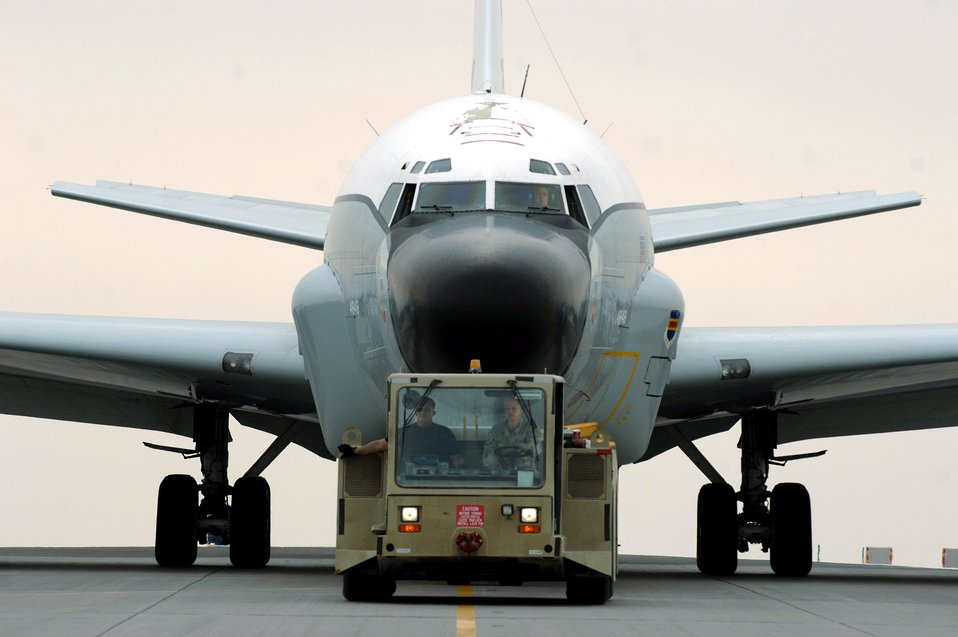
Reconnaissance aircraft, team reach milestone

Staff Sgt. John Terlaje and Airman 1st Class Ross Vandenbosch tow an RC-135 Rivet Joint reconnaissance aircraft to a nearby maintenance area. The crew chiefs are deployed from the 55th Aircraft Maintenance Squadron, Offutt Air Force Base, Neb.